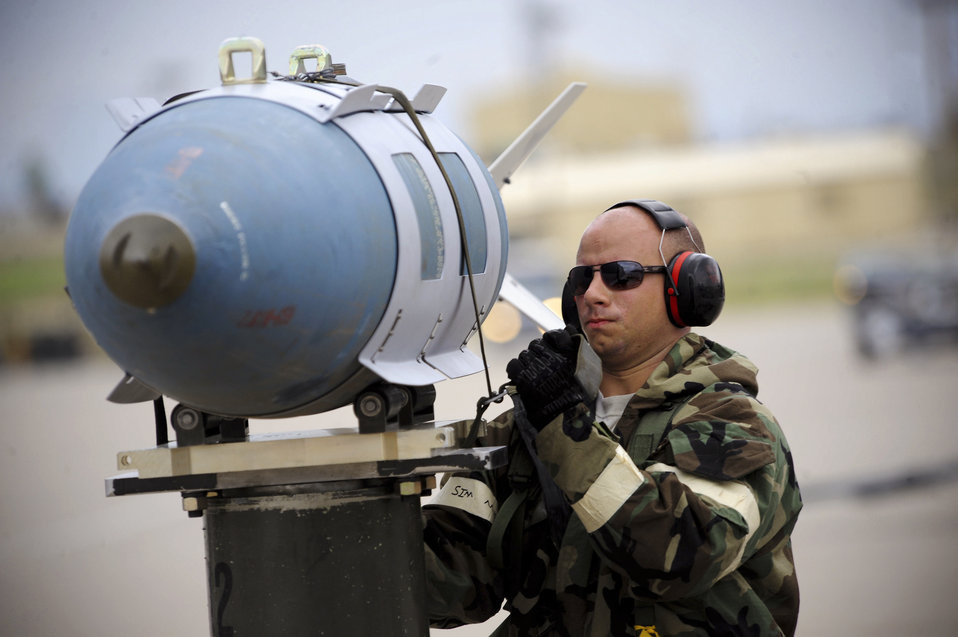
Heavy payload

Airman 1st Class Jordan Linial, a weapons loader with the 28th Munitions Squadron, tightens a strap on a GBU-31 July 21, 2010, during the phase II operational readiness exercise at Ellsworth Air Force Base, S.D. A B-1B Lancer can accommodate 24 GBU-31s, which weigh about 2,000 pounds each.